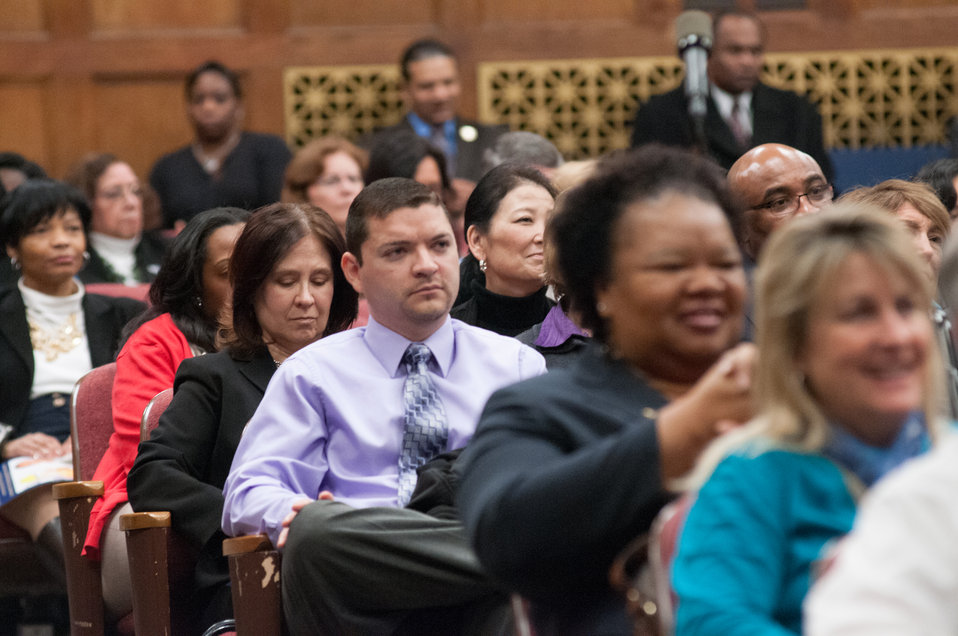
An U.S. Department of Agriculture (USDA) audience llisten to the speakers, during the 2013 Women’s History Month Observance event, “Women Inspiring Innovation Through Imagination: Celebrating Women in Science, Technology, Engineering, and Mathematics, on Thursday, March 21, 2013, in Washington, D.C. The keynote speaker is American Association of University Women Executive Director and CEO Linda Hallman. Additional remarks were made by Agriculture Deputy Secretary Dr. Kathleen Merrigan; Rural Development Acting Deputy Under Secretary Judith Canales; Administration Deputy Assistant Secretary Deputy Assistant Secretary Robin Heard; and Agriculture Research Service National Programs Associate Administrator Dr. Chavonda Jacobs-Young.